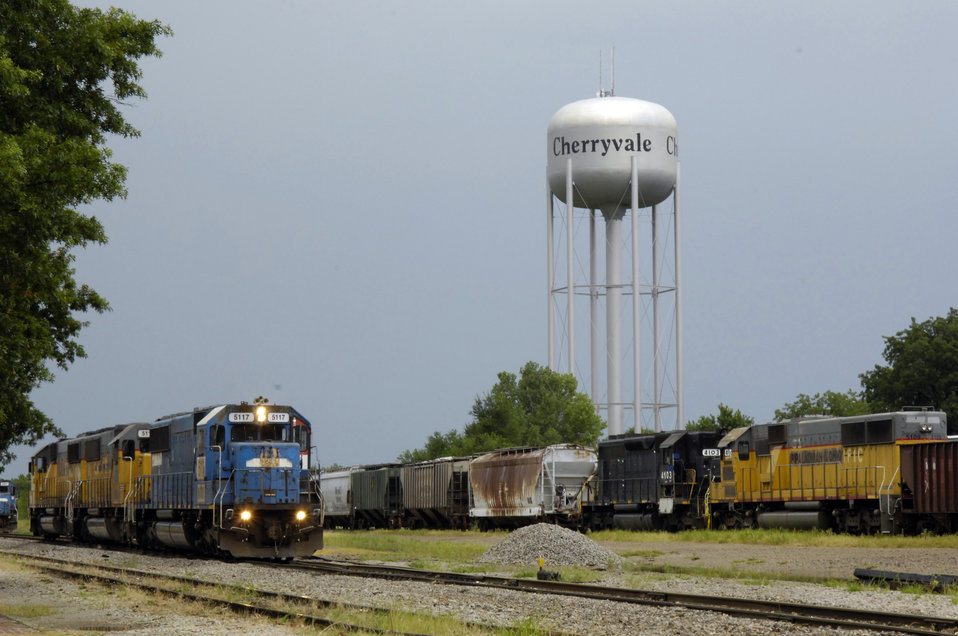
A freight train passes through Cherryvale, Kansas on August 17, 2009.